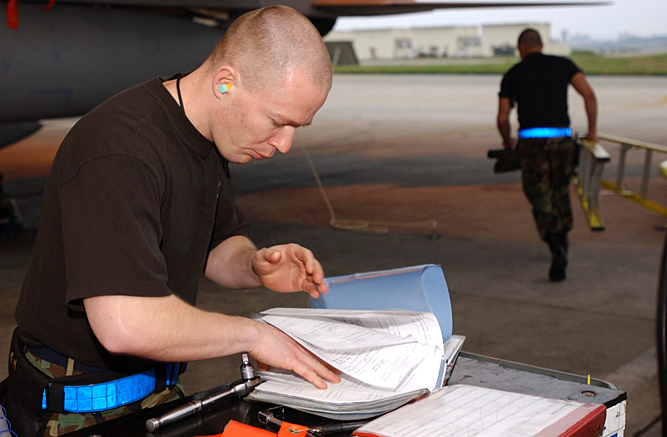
For the win

KADENA AIR BASE, Japan (AFPN) -- Staff Sgt. Matthew Andrews reads through a checklist before he begins loading munitions. Airmen competed in a load crew competition Jan. 27. The load crew competition evaluates the Airmen's timeliness and accuracy of loading munitions.